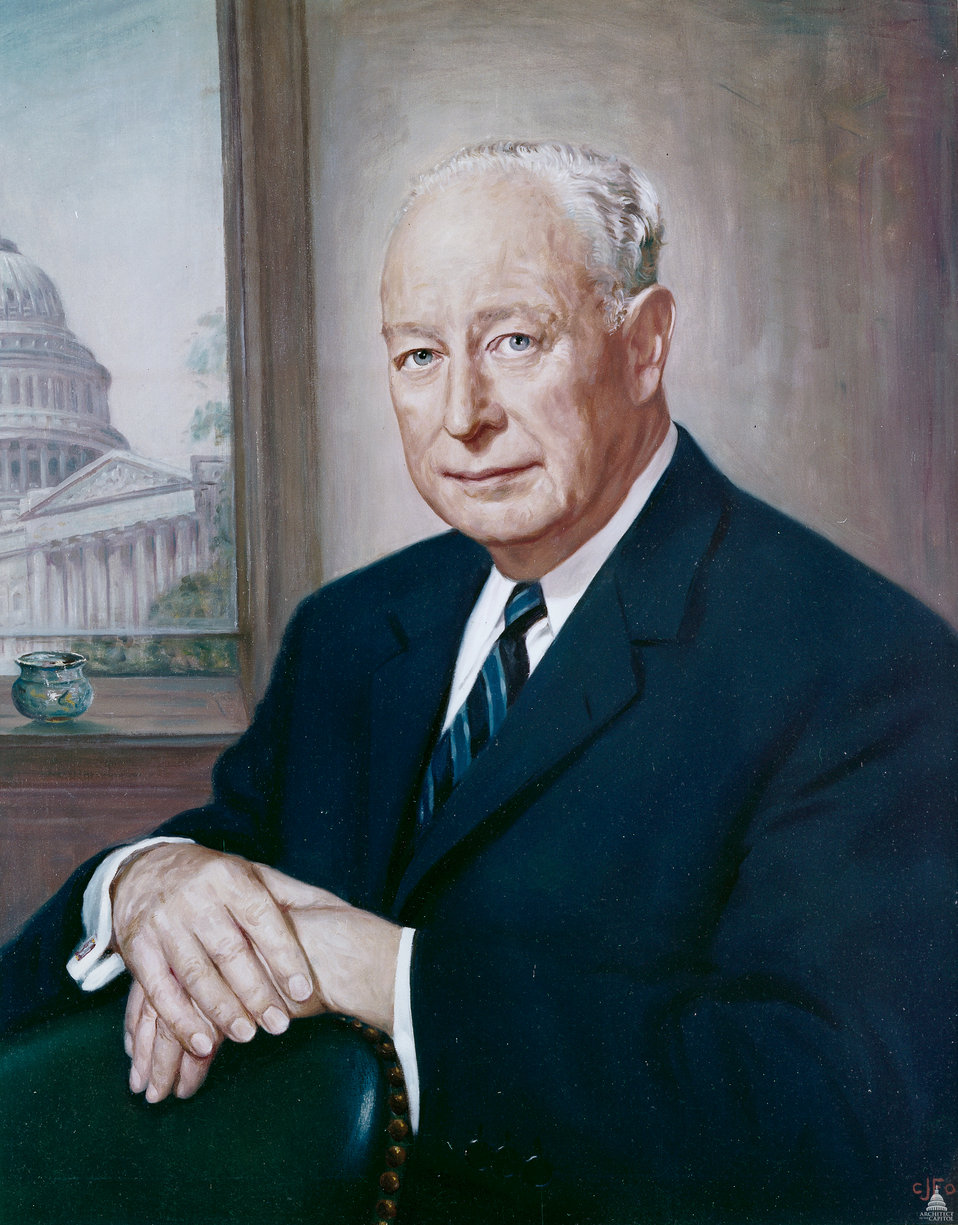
J. George Stewart served as the eighth Architect of the Capitol

Portrait by Charles J. Fox
Oil on canvas, 29-1/2' x 24-1/2'
Gift of the Stewart family, 1970